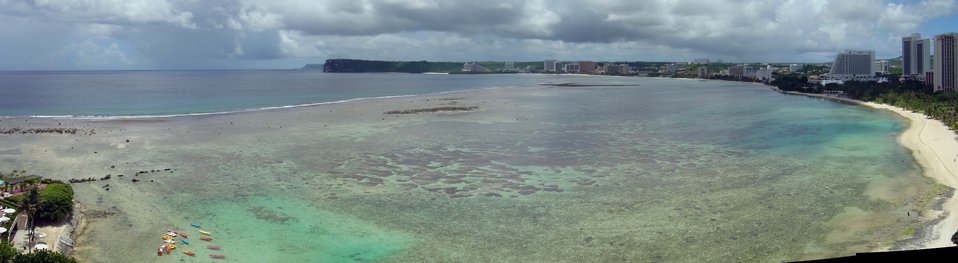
Tumon Bay mosaic, Guam coastline.